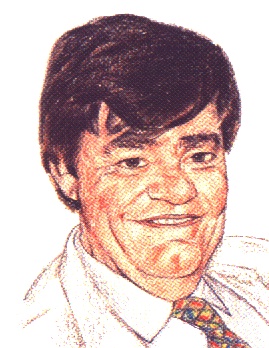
Paddy Briggs